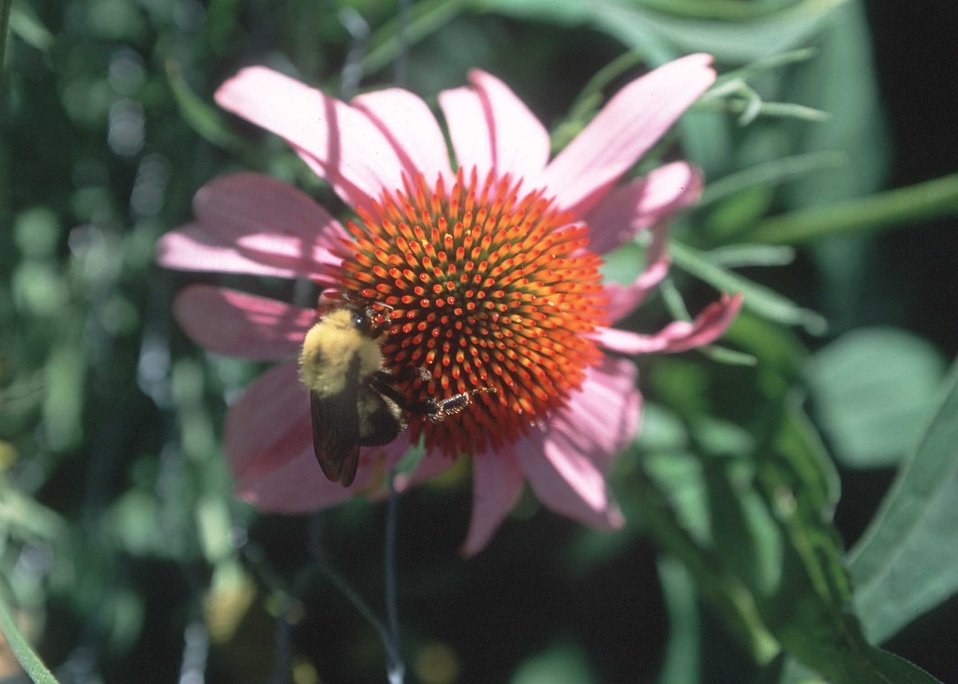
Bumblebee pollinating a purple coneflower.